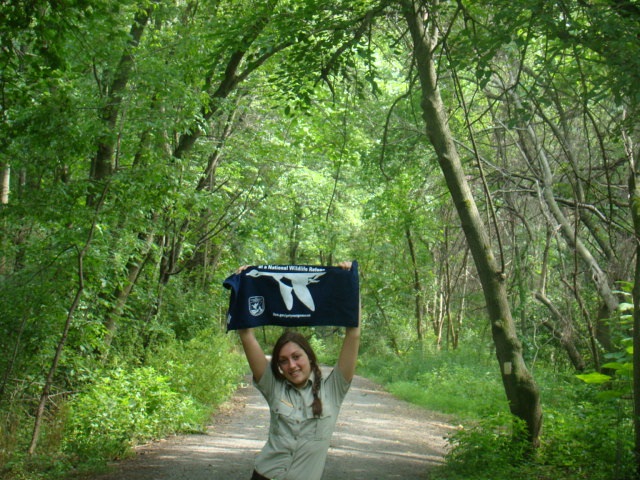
Get Your Goose On!

GYGO! at John Heinz National Wildlife Refuge.